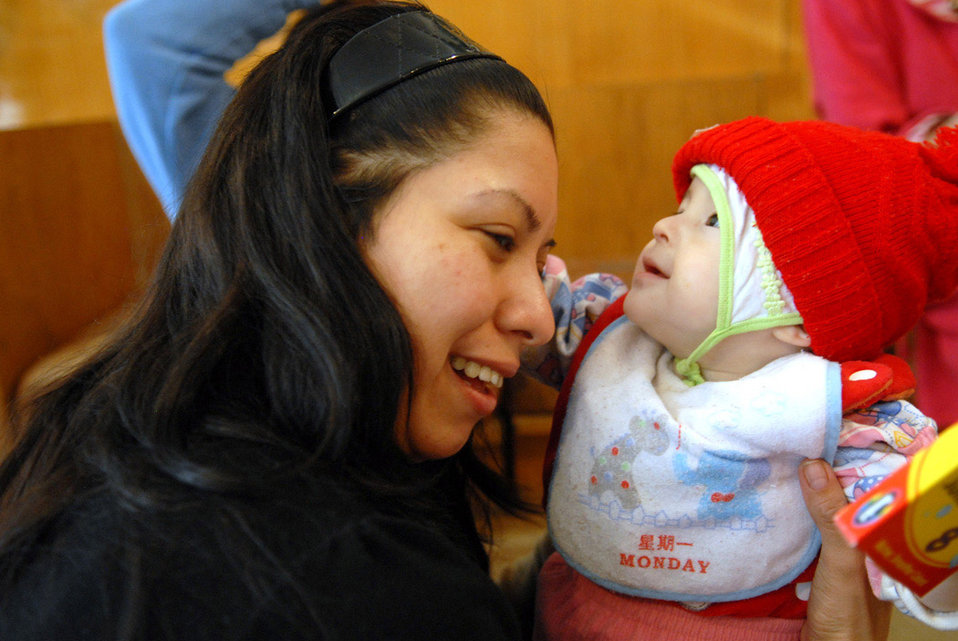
The heart of giving

Senior Airman Sonya Deleon plays with a child who is awaiting heart surgery Dec. 3 in Bishkek, Kyrgyzstan. Over the past five years, $71,680 of contributions from base Airmen have funded heart operations on 128 children at the Bishkek hospital. Airman Deleon is assigned to the 376th Expeditionary Force Support Squadron.